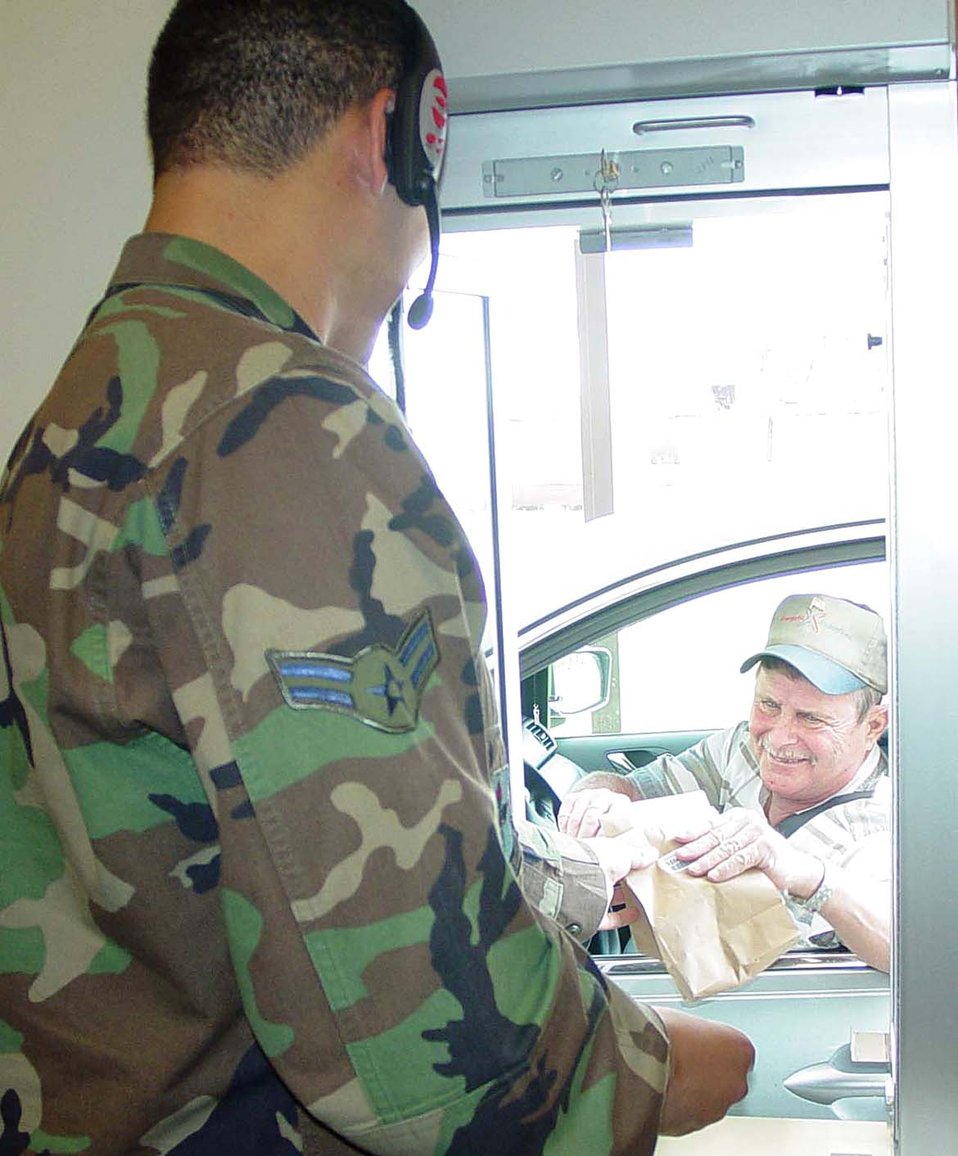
Keesler Medical Center rebounds from Katrina

Airman 1st Class Eduardo hands a prescription to retiree Charley McNaron at the temporary satellite pharmacy drive-through window. Airman Caetano is a pharmacy technician with the 81st Medical Support Squadron pharmacy flight at Keesler Air Force Base, Miss.